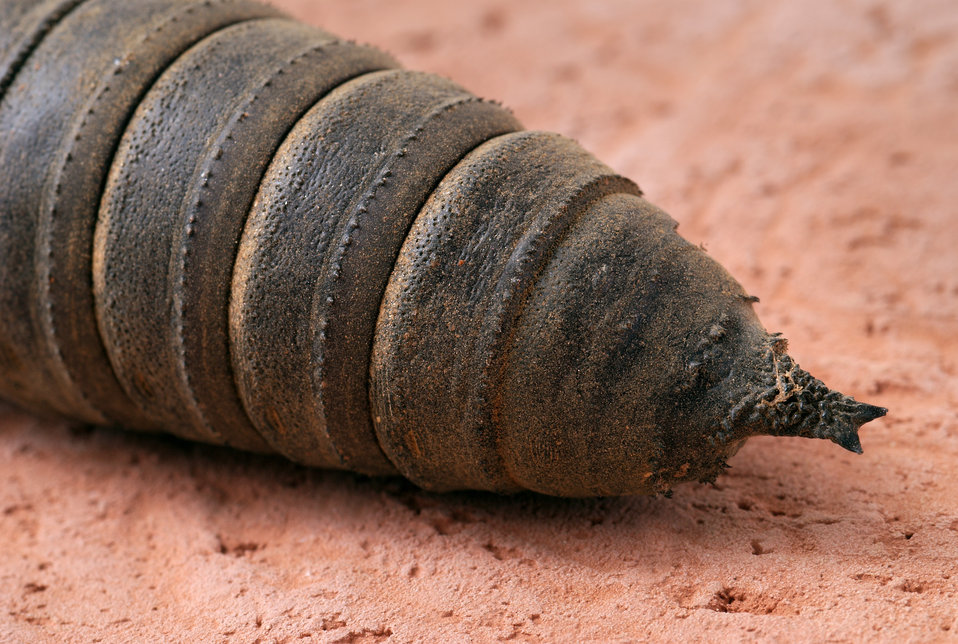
This 2008 image depicts a ventral view, i.e., from below, of a Regal Moth, Citheronia regalis pupa.